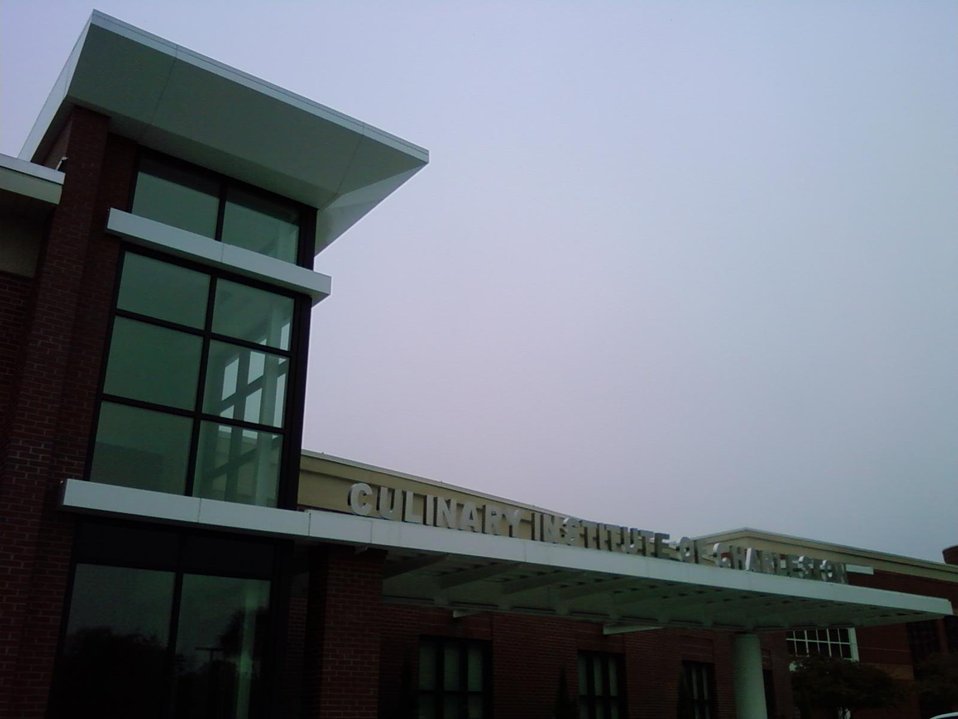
SC event 15

Broadband Field Hearing, in Charleston, South Carolina. 10-06-09